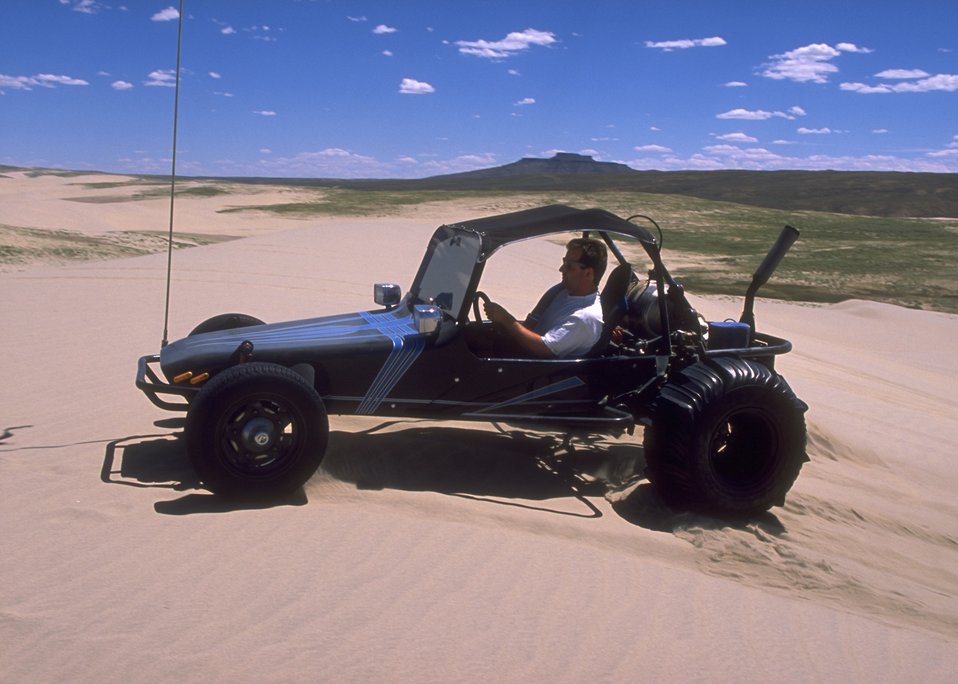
Sand Dunes OHV Area, Rock Springs Field Office.